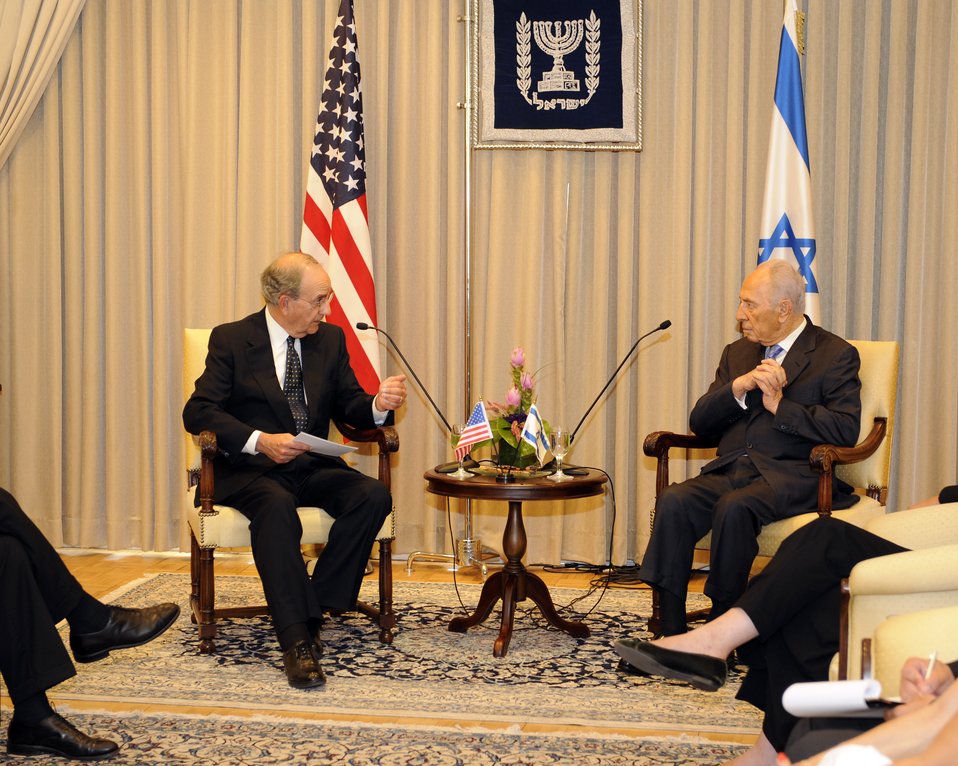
U.S. Special Envoy George Mitchell Meets With Israeli Defense Minister

U.S. Special Envoy George Mitchell with Israeli Minister of Defense Ehud Barak during their meeting in Tel Aviv, Israel July 26, 2009.